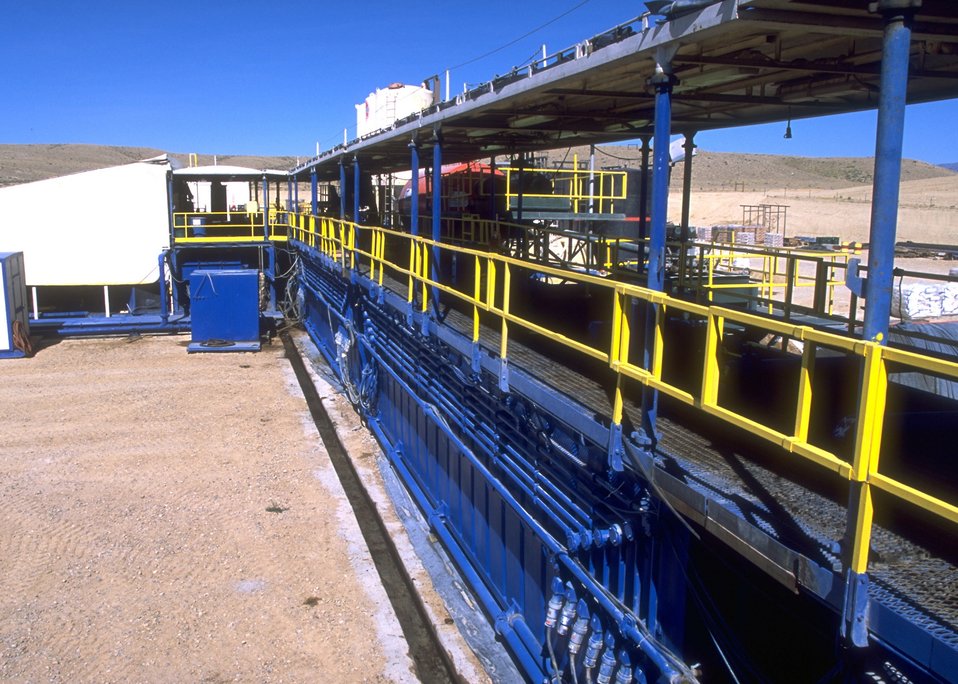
Supporting facilities on the Burlington Northern deep well rig, Casper Field Office.